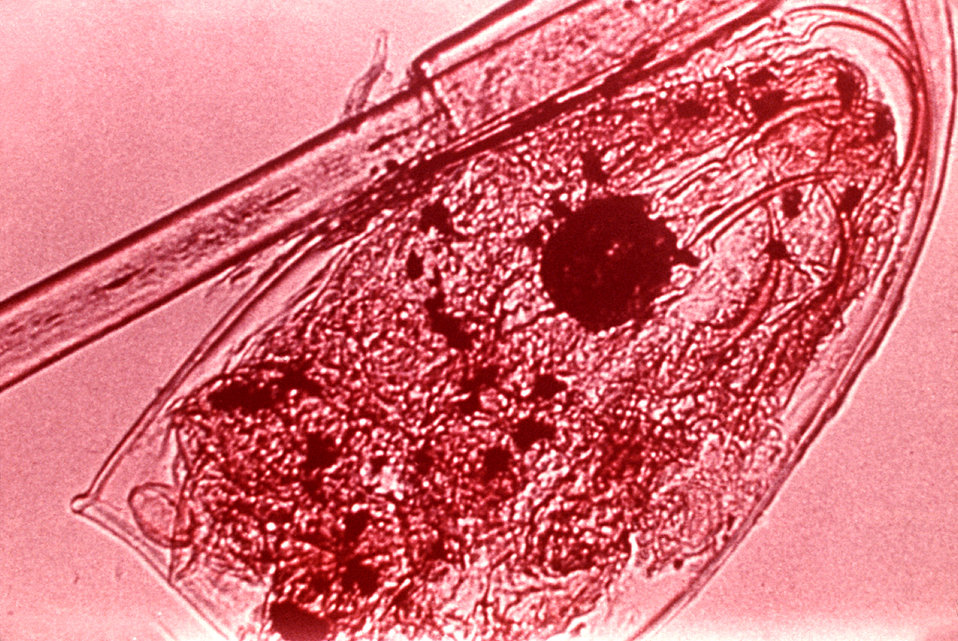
This micrograph depicts the egg of the 'head louse' Pediculus humanus var. capitis, attached to a hair shaft.